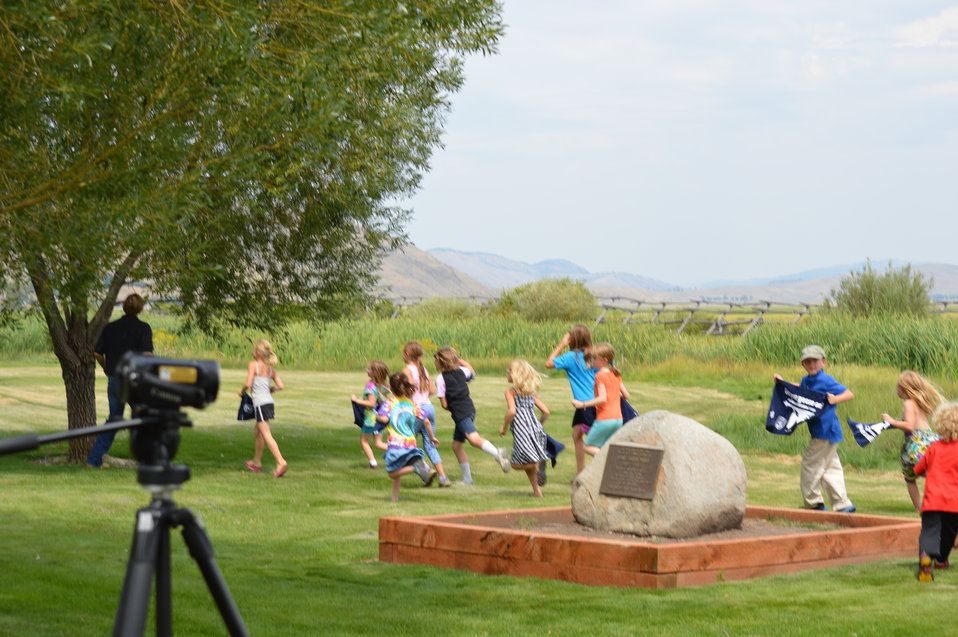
Get Your Goose On! - National Elk Refuge Style

On August 10, 2012 the U.S. Fish and Wildlife Service and Partners celebrated the 100 year anniversary of the establishment of the National Elk Refuge. In these photos, young attendees, along with Puddles the Blue Goose and the National Elk Refuge's mascot, showed us how to Get Your Goose On! with style.